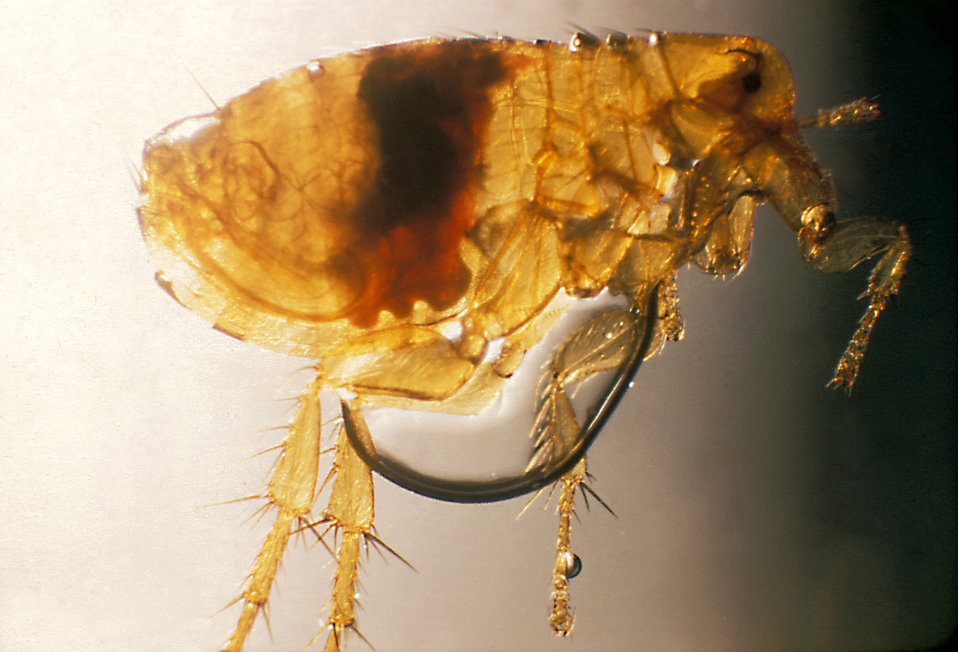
Plague infected male Xenopsylla cheopis 28 days after feeding on an inoculated mouse.